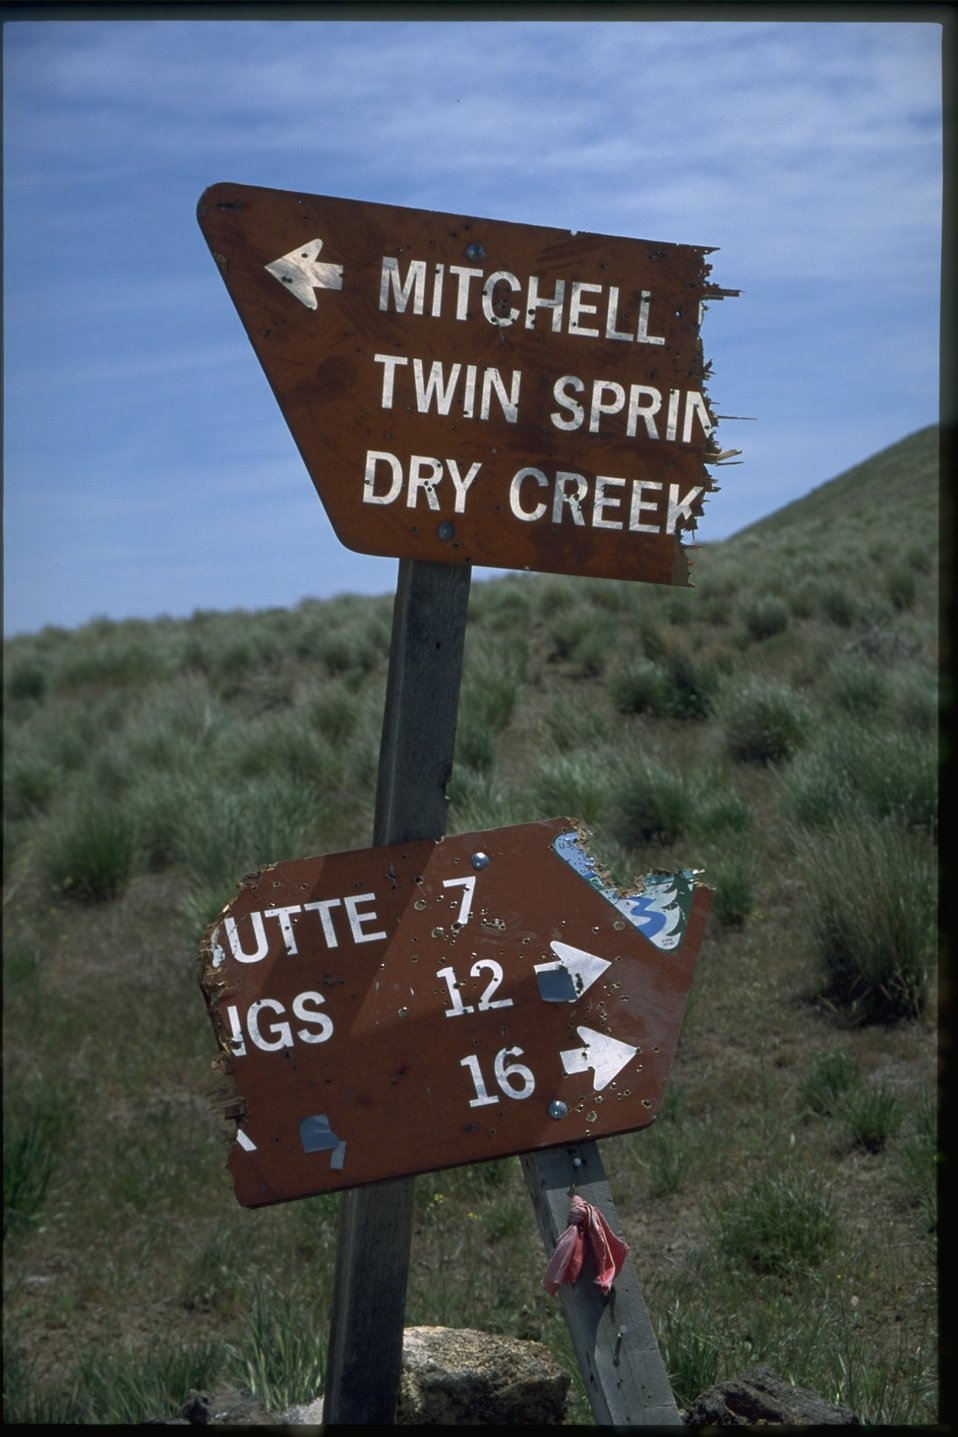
Broken sign.